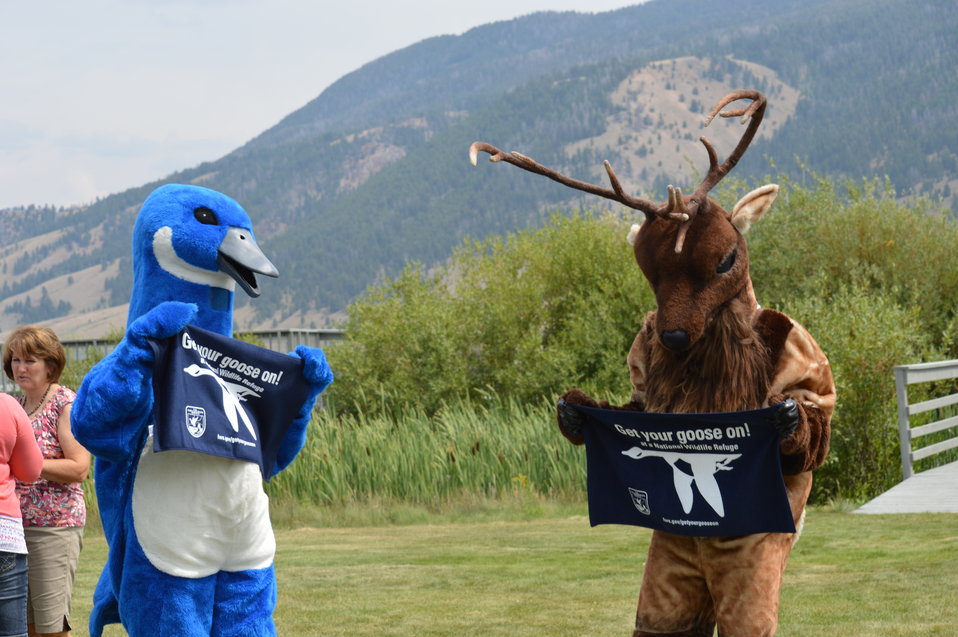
Get Your Goose On! - National Elk Refuge Style

On August 10, 2012 the U.S. Fish and Wildlife Service and Partners celebrated the 100 year anniversary of the establishment of the National Elk Refuge. In these photos, young attendees, along with Puddles the Blue Goose and the National Elk Refuge's mascot, showed us how to Get Your Goose On! with style.